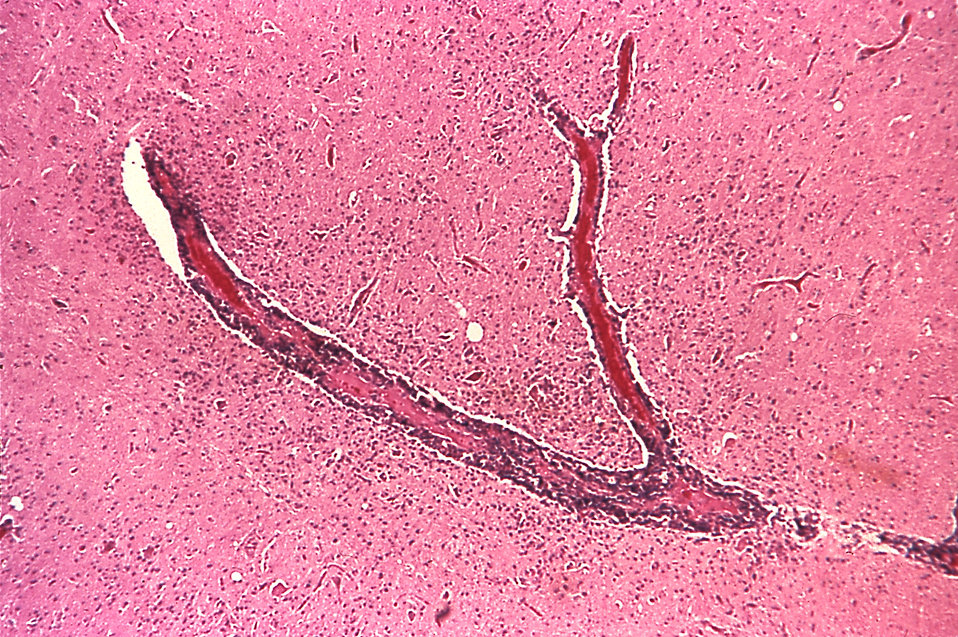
This micrograph depicts the histopathologic changes associated with rabies encephalitis prepared using an H&E stain.